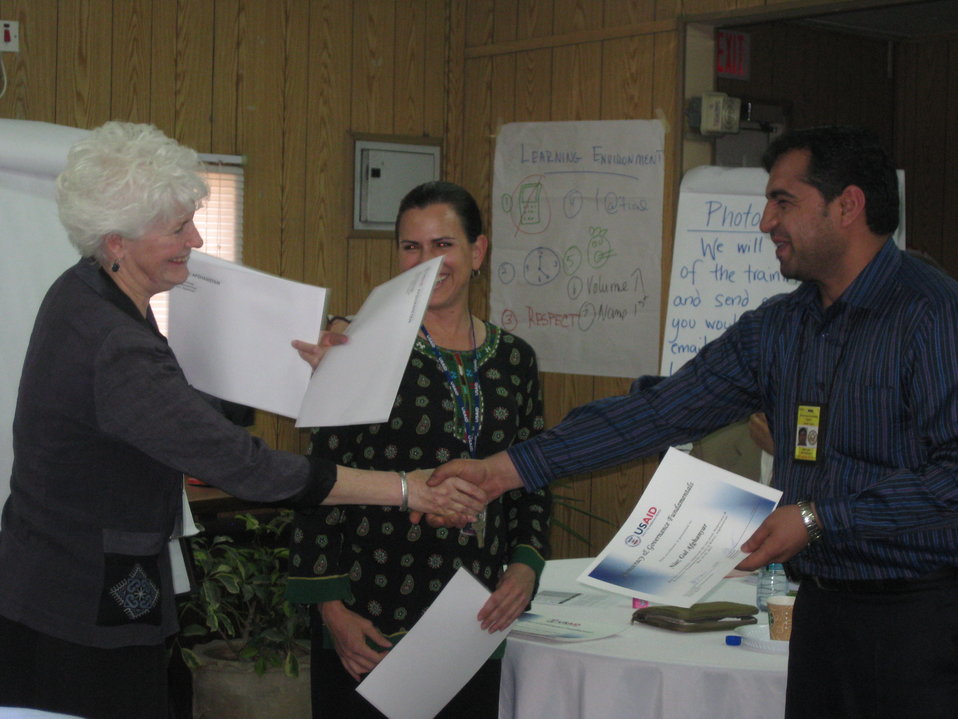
Afghan Youth Voices 053